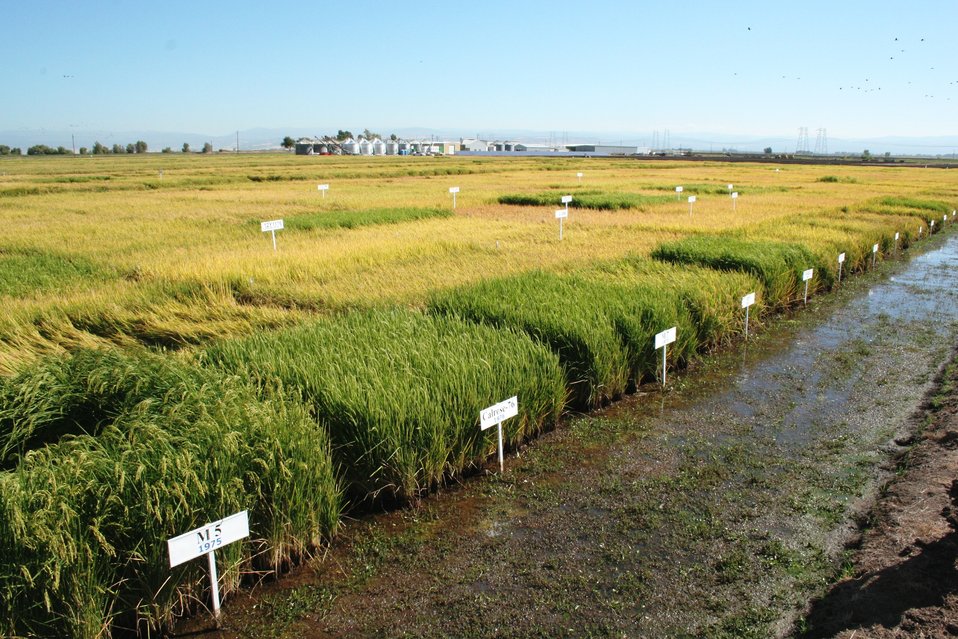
FDA's Rice Tour: Looking for Insights on Arsenic (0767)

FDA Commissioner Margaret A. Hamburg and colleagues visited research facilities and rice farms in California on Sept. 4-5, 2013 in an effort to gain a greater understanding of the presence of arsenic in rice. They toured the facilities and research fields at the Rice Experiment Station in Biggs, Calif. For more information, read the FDA Voice blog:

• On Farms and in Labs, FDA and Partners Are Working to Get Answers on Arsenic in Rice